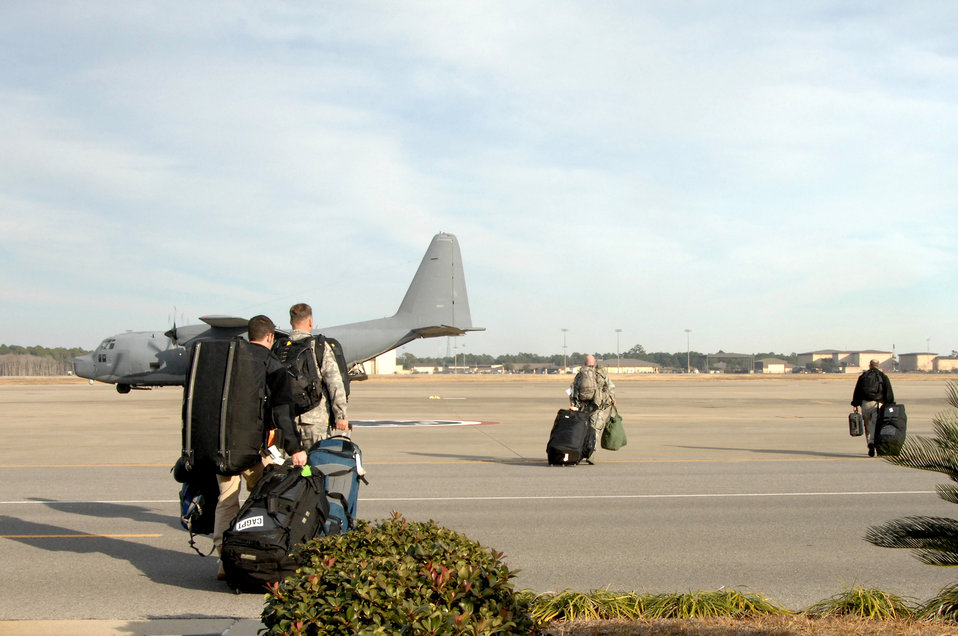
Special operations Airmen deploy to Haiti to provide humanitarian relief

Airmen carry gear to an MC-130H Combat Talon II before departing for Haiti Jan. 13, 2010 at Hurlburt Field, Fla. These Airmen will participate in the humanitarian assistance and disaster relief mission in Haiti.